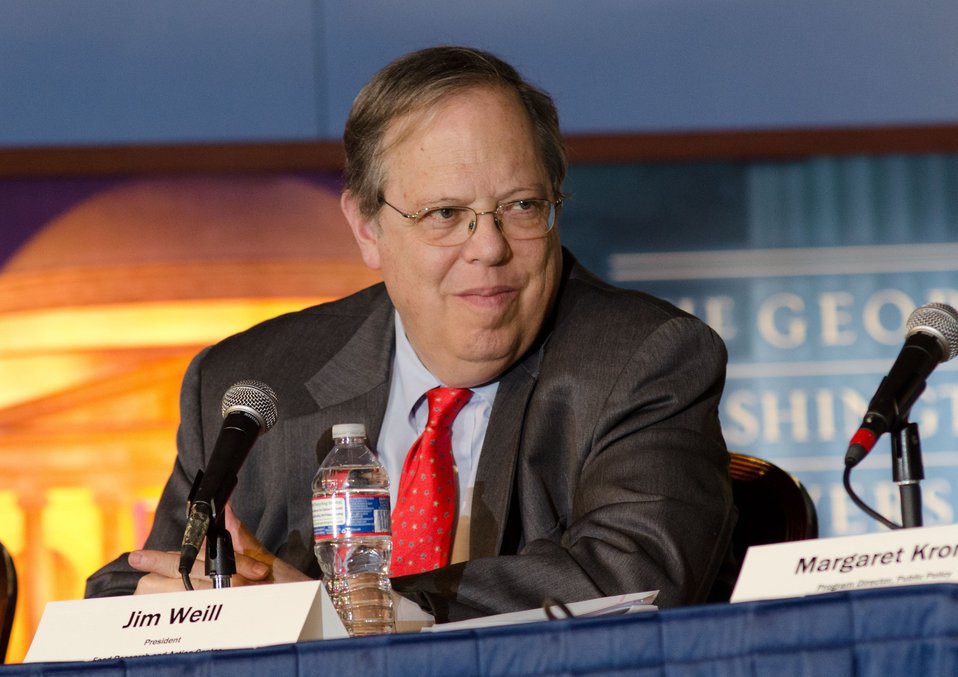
Food Research and Action Center President Jim Weill, makes opening remarks before a question and answer session during the “Shaping the Farm Bill for a Sustainable Future” Forum in the Jack Morton Auditorium, at the Trachtenberg School of Public Policy and Public Administration, on the George Washington University campus in Washington, D.C., on Thursday, March 1, 2012.